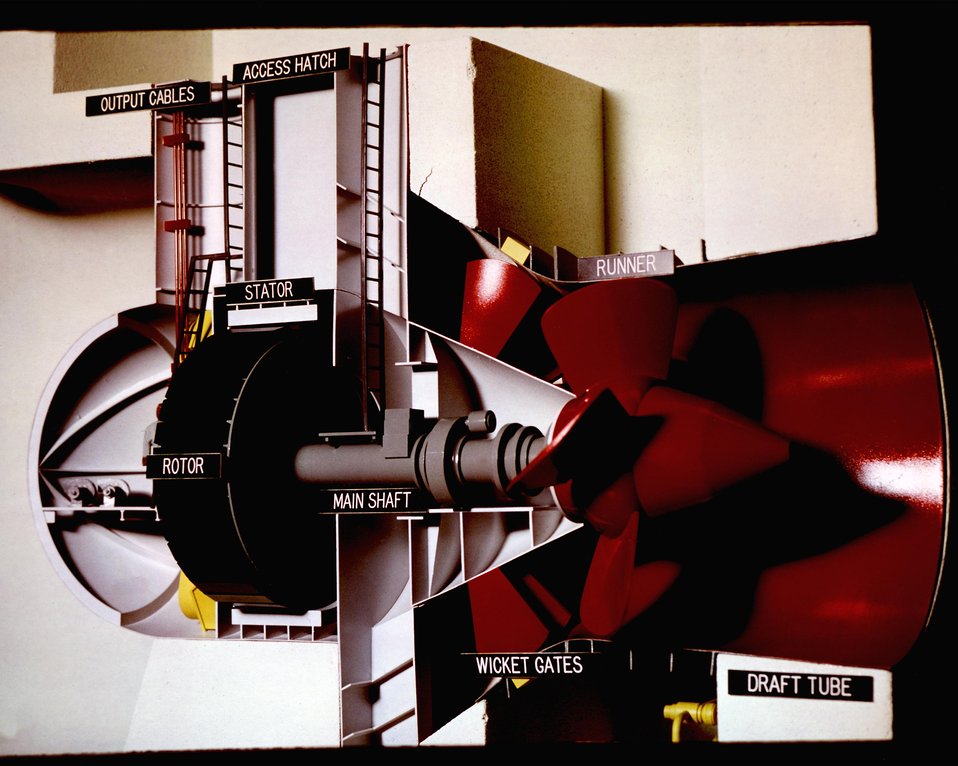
CUTAWAY MODEL OF THE TYPE OF BULB TURBINE THAT WILL BE USED AT IDAHO FALLS.

THE DEMONSTRATION PROJECT AT IDAHO FALLS CONSISTS OF REDEVELOPING THE CITY'S THREE EXISTING POWER PLANT SITES. THESE THREE SITES, ALONG THE SNAKE RIVER, ARE GOING TO CONTAIN LOW-HEAD HYDROELECTRIC PLANTS. A 7.2 MWE BULB TURBINE-GENERATOR WILL BE INSTALLED ON EACH SITE. ONE SITE WILL ALSO MAINTAIN TWO EXISTING 1.875 MWE UNITS AS STANDBY OR PEAK FLOW UNITS. PRIOR TO THIS PROJECT, BULB TURBINES HAD ONLY BEEN USED FOR HIGH POWER GENERATION. THIS PROJECT IS GOING TO DEMONSTRATE THAT BULB TURBINES CAN BE USED ECONOMICALLY FOR SMALL-SCALE, LOW-HEAD HYDROELECTRIC POWER GENERATION. THE PROJECT IS ALSO GOING TO DEMONSTRATE THAT THIS TECHNOLOGY CAN BE USED IMMEDIATELY, IT DOES NOT NEED EXTENSIVE RESEARCH AND DEVELOPMENT.